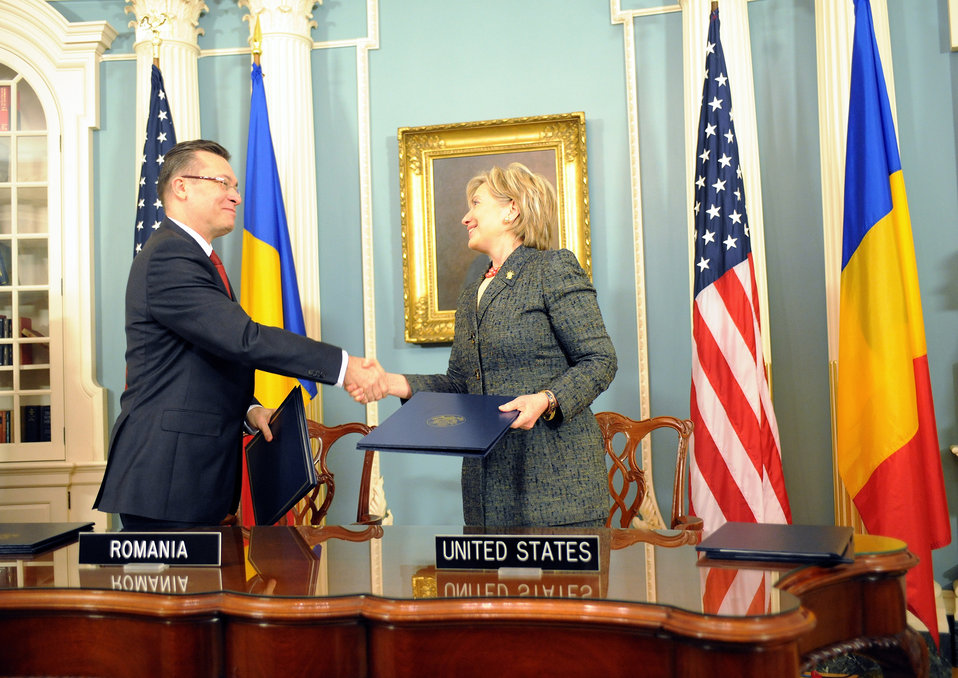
Secretary Clinton and Romanian Foreign Minister Sign Agreements

U.S. Secretary of State Hillary Rodham Clinton and Romanian Foreign Minister Cristian Diaconescu deliver remarks during a signing ceremony for the Protocols of Exchange of Instruments of Ratification for the U.S.-Romania Mutual Legal Assistance Protocol and the U.S.-Romania Extradition Treaty at the U.S. Department of State in Washington, DC May 8, 2009.